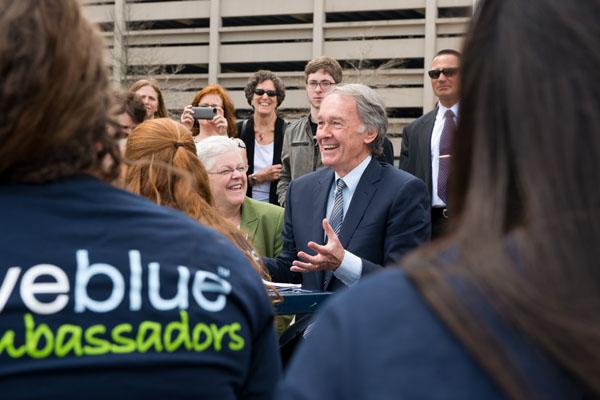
Day in the Life - Earth Day, April 22, 2014

12:48 pm – McCarthy and Markey share a laugh when talking about their long careers in protecting the environment and the importance of Earth Day. (6/12)